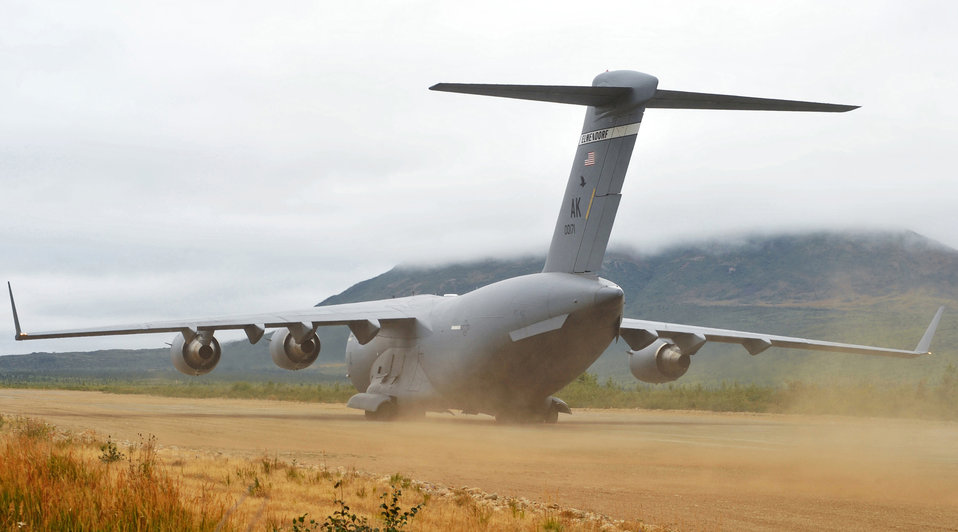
C-17 crew assists Soldiers for Arctic Response

A C-17 Globemaster III kicks up a cloud of dust as it lands at an unimproved air strip Aug. 24 near Elmendorf Air Force Base, Alaska. The crew from the 517th Airlift Squadron assisted in deploying 120 Soldiers from the 17th Combat Service Support Battalion on Fort Richardson during Arctic Response. Arctic Response is an Army emergency deployment readiness exercise.